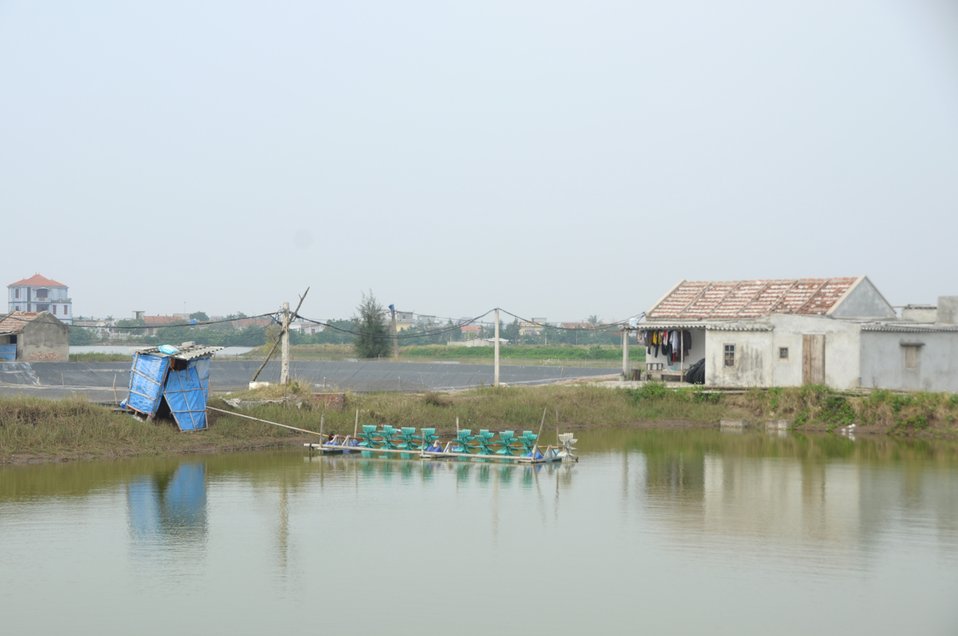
A shrimp farm in Nam Dinh.

Quat Lam, Nam Dinh. January 16, 2014.